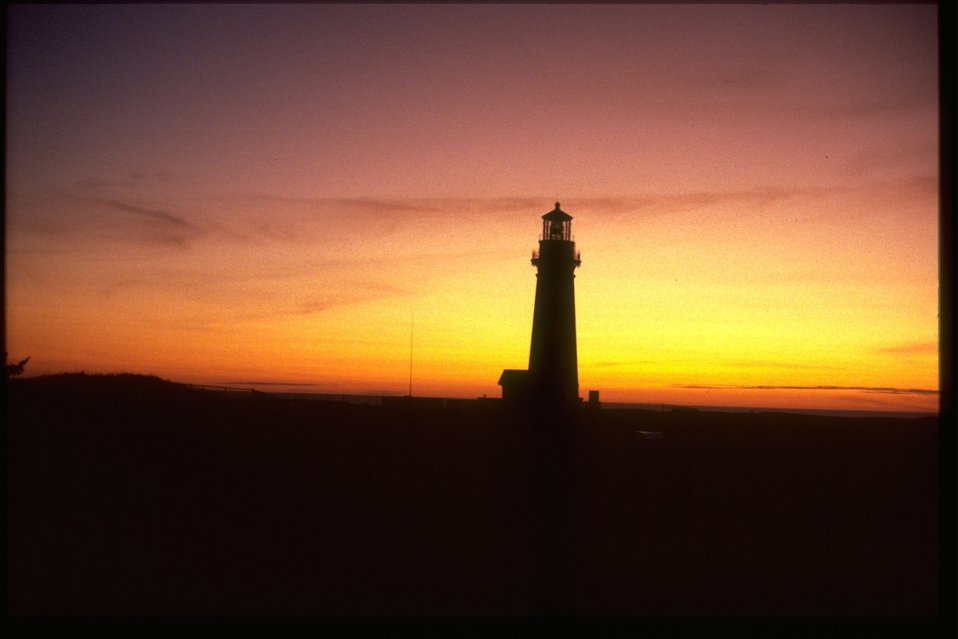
Yaquina Head lighthouse at sunset.